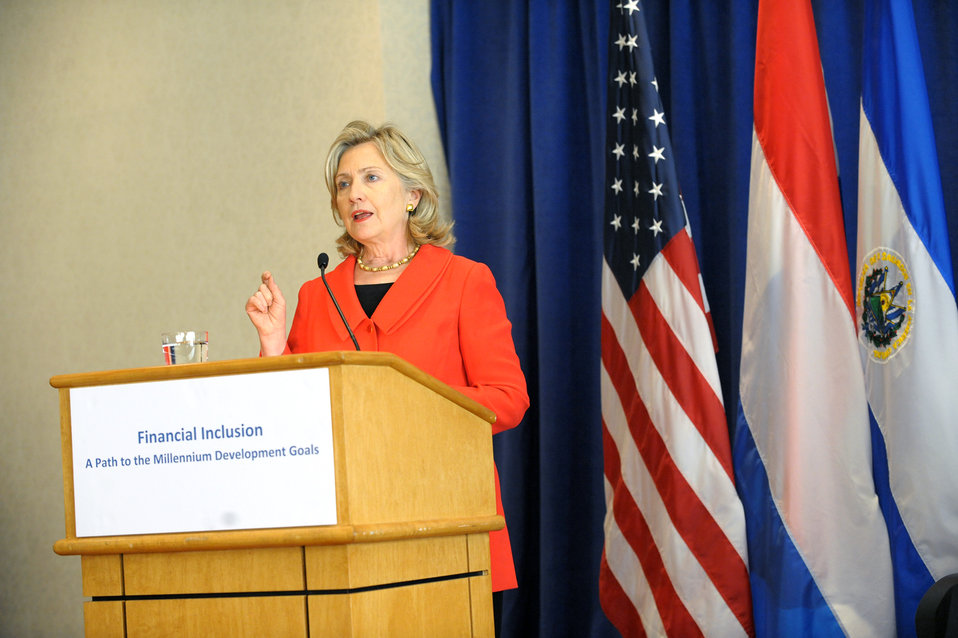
Secretary Clinton Delivers Remarks on 'Inclusive Finance: A Path to the MDGs'

U.S. Secretary of State Hillary Rodham Clinton delivers remarks at a luncheon on “Inclusive Finance: A Path to the MDGs,” hosted jointly by the United States and the Netherlands at the Helmsley Hotel in New York, New York, on September 22, 2010.